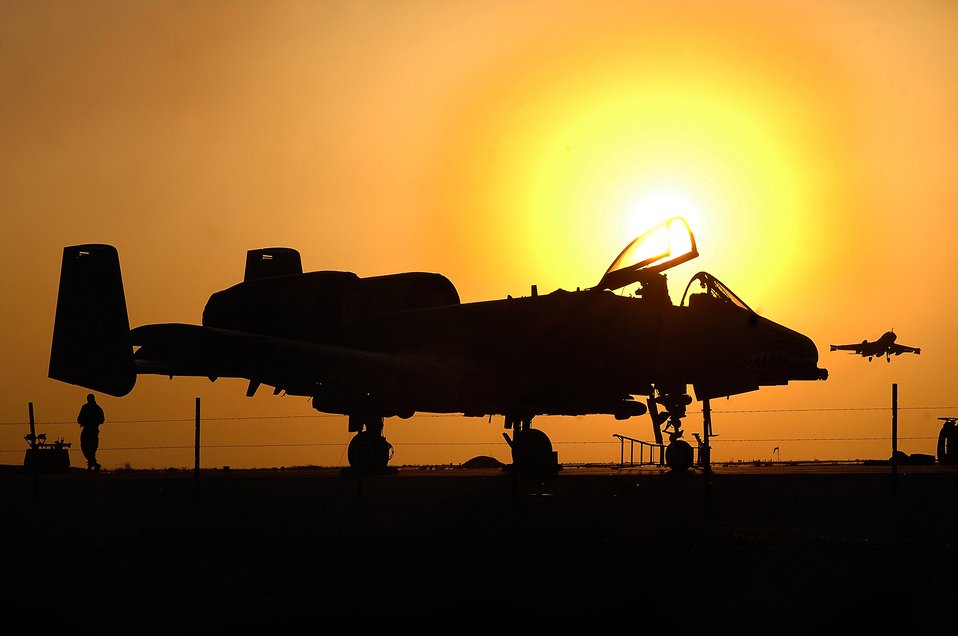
A-10 provides top cover for troops in Iraq

Maintenance crews on the A-10 Thunderbolt II end their 12-hour duty day April 25 at the Al Asad Air Base, Iraq. The 438th Air Expeditionary Group A-10s perform 10 sorties daily providing top cover for ground forces in Iraq, with 900 sorties in this last four months.